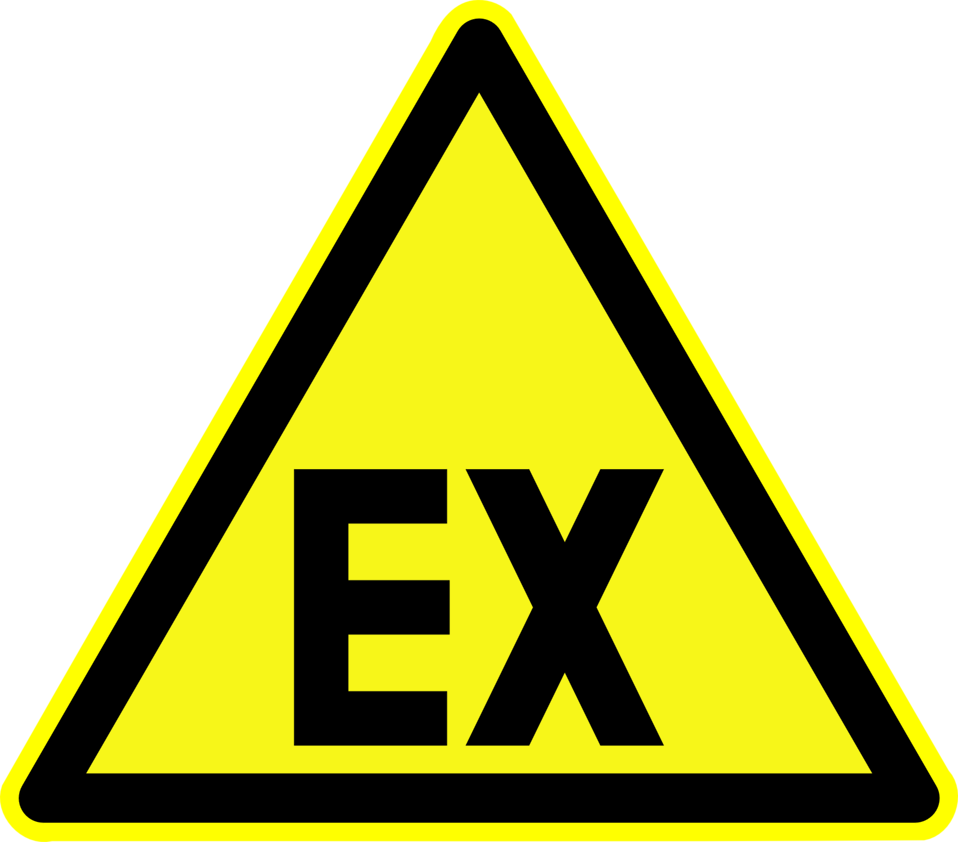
Deutsch: Warnung vor explosionsfähiger Atmosphähre, Warnzeichen D-W021 nach DIN 4844-2 Explosible region, warning sign D-W021 according to German standard DIN 4844-2